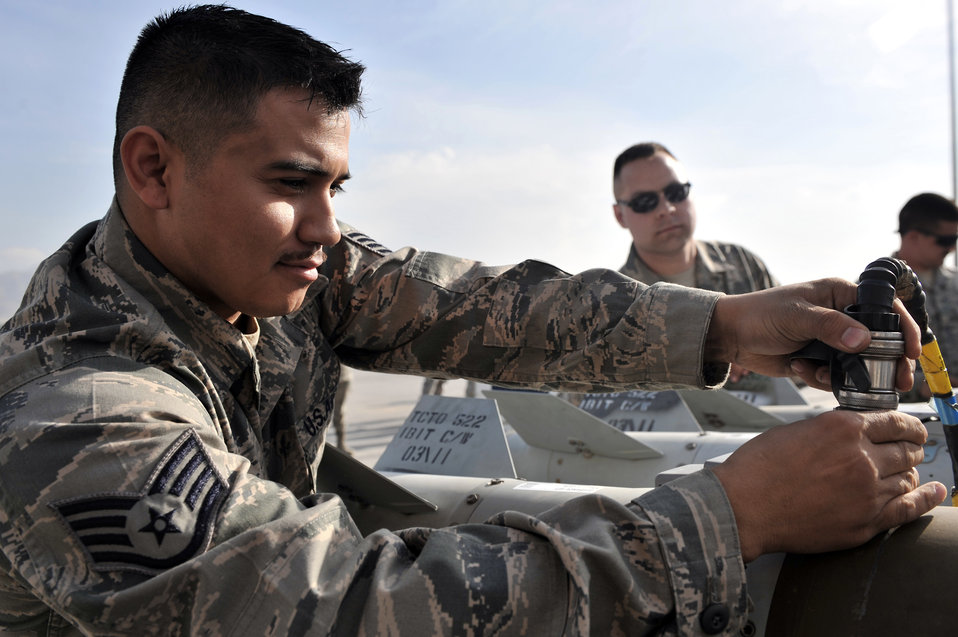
Ammo airmen supply the fight

Staff Sgt. Raul Viernes connects a cable to a KMU-572 fin March 23, 2011, at Bagram Airfield, Afghanistan. Sergeant Vierness is an ammunition supply point technician assigned to the 455th Expeditionary Maintenance Squadron.